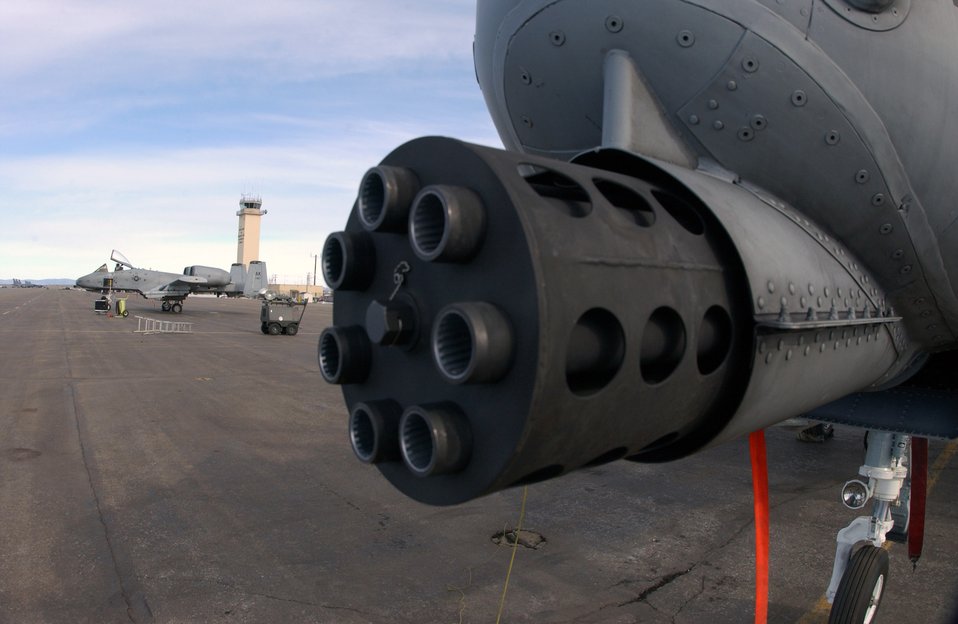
New wings to secure A-10 longevity

Two A-10 Thunderbolt IIs from the 355th Fighter Squadron at Eielson Air Force Base, Alaska, sit on the flightline awaiting the next mission. On the nose of the A-10 is a 30mm GAU-8 Avenger seven-barrel Gatling gun which is used to pierce heavy armor.